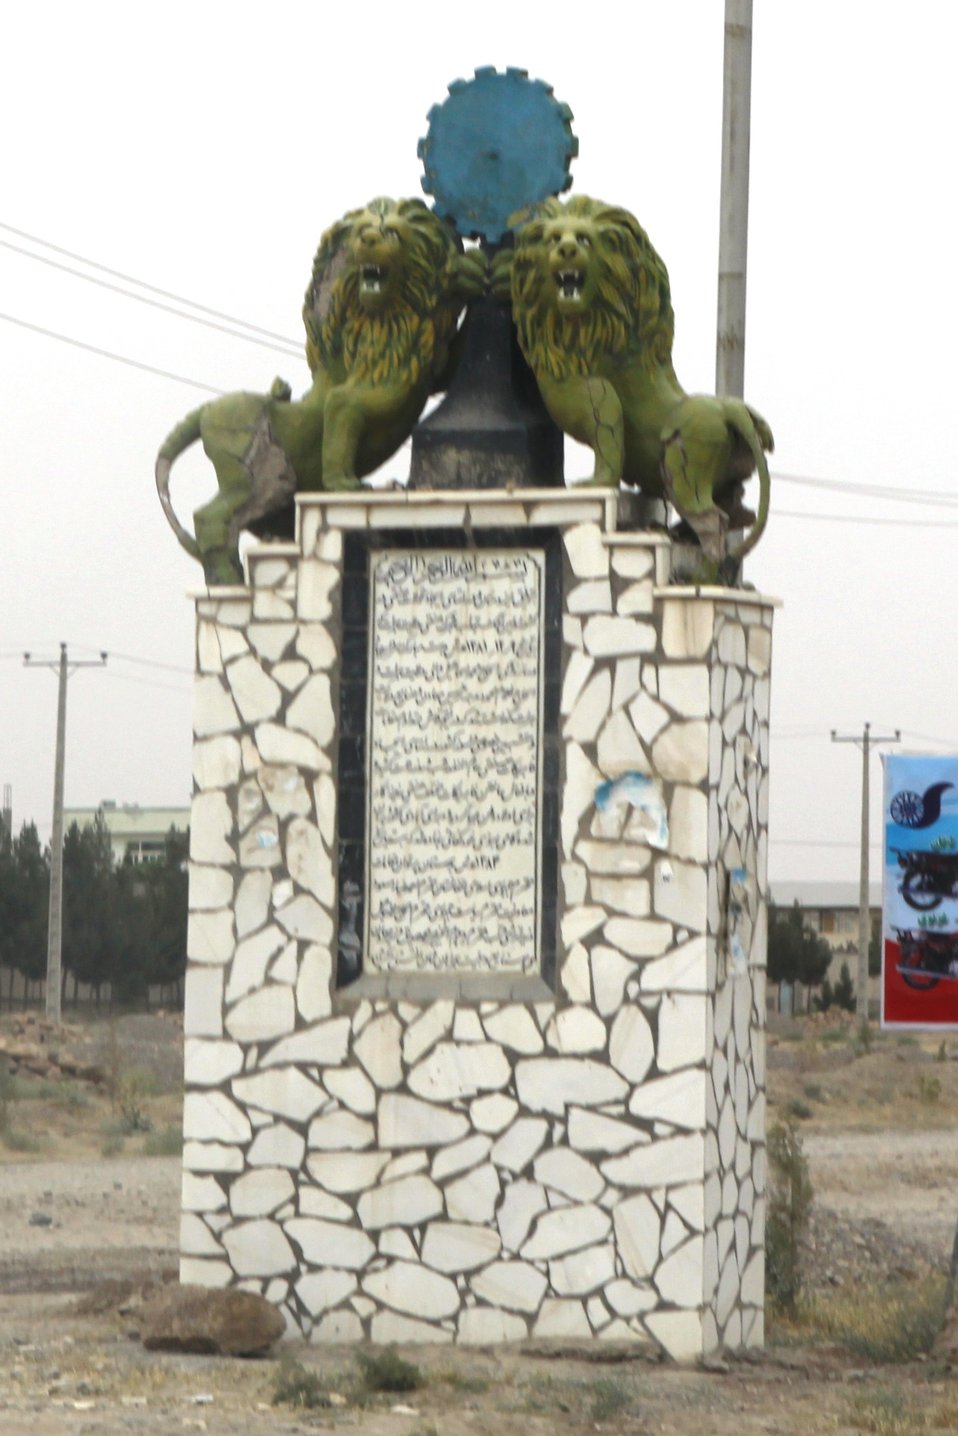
100525 Hirat Marble Conference 043